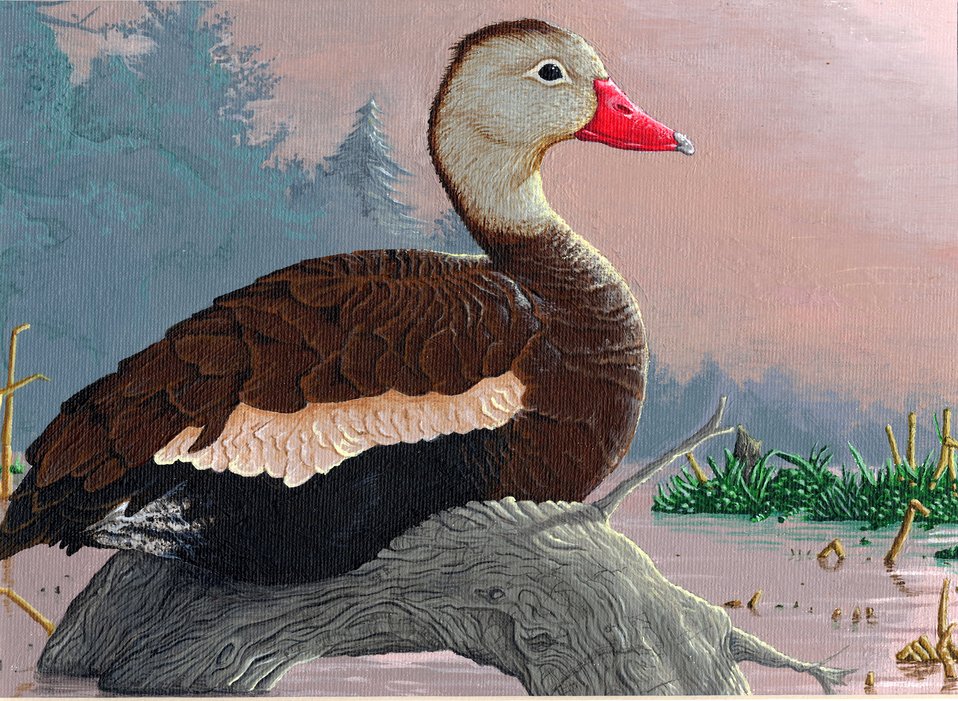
Colorado

2012 Jr Duck Stamp Program
State Best of Show
Colorado